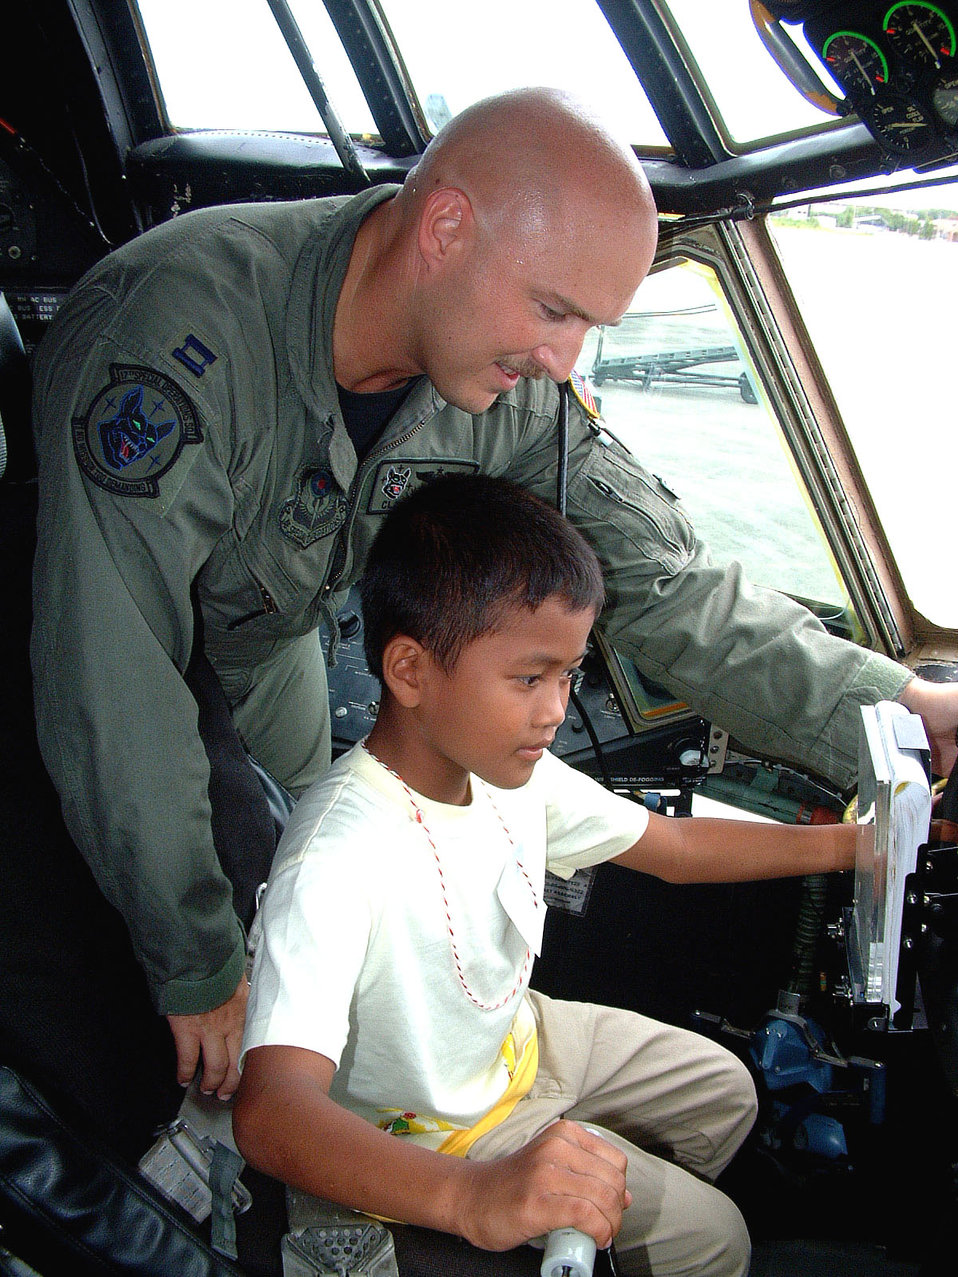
Olander

U-TAPAO AIR BASE, Thailand -- Capt. Clark Olander shows children from a nearby orphanage around the cockpit of an MC-130P Combat Shadow. Olander is a 17th Special Operations Squadron navigator from Kadena Air Base, Japan. His team is deployed here to train with other U.S. and Thai special operations forces.